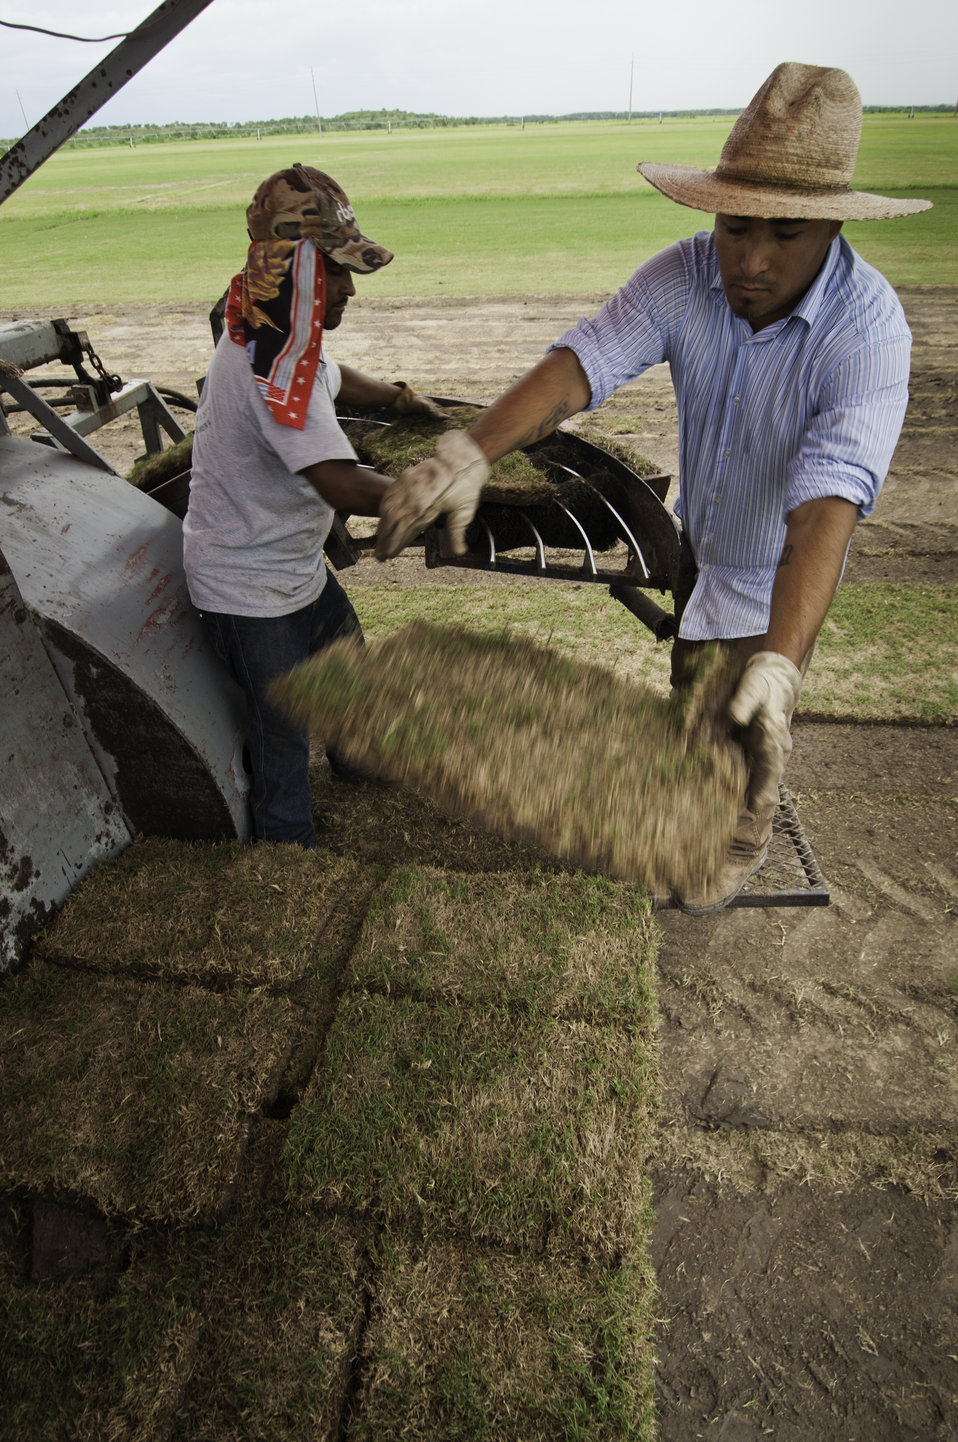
Sod used for landscaping is harvested on the Quality Turf Farms in Guy, TX on Aug. 23, 2013.